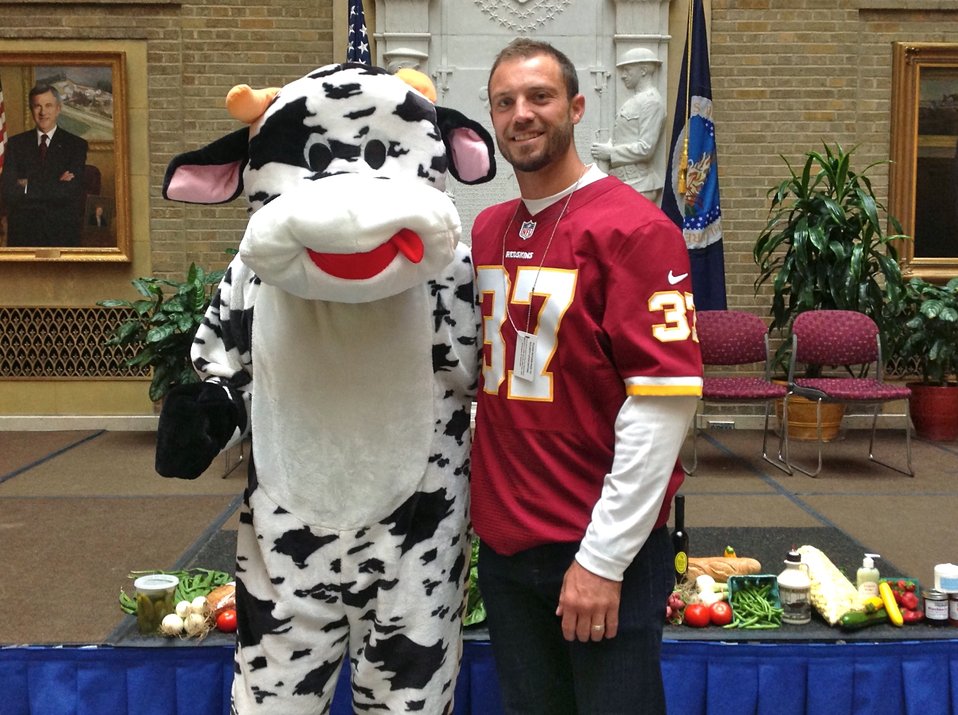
Doughty with the USDA Dairy Cow

Washington Redskins player Reed Doughty smiles with the U.S. Department of Agriculture (USDA) Dairy Cow at the USDA Farmers Market opening on Friday, Jun. 7, 2013.